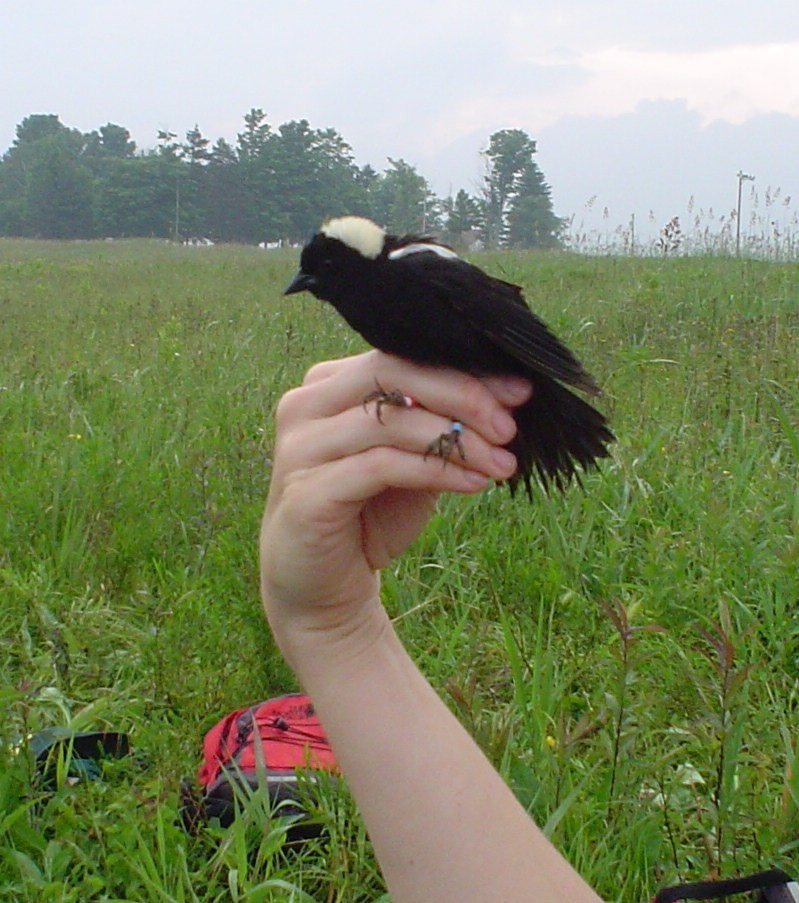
A Bird in Hand

This male bobolink, a distinctive bird of the open grasslands, is the only bird that is black underneath and white on the back. This coloring makes the male stand out while he is performing his displays. Bobolinks usually appear in Canaan Valley in mid to late summer.